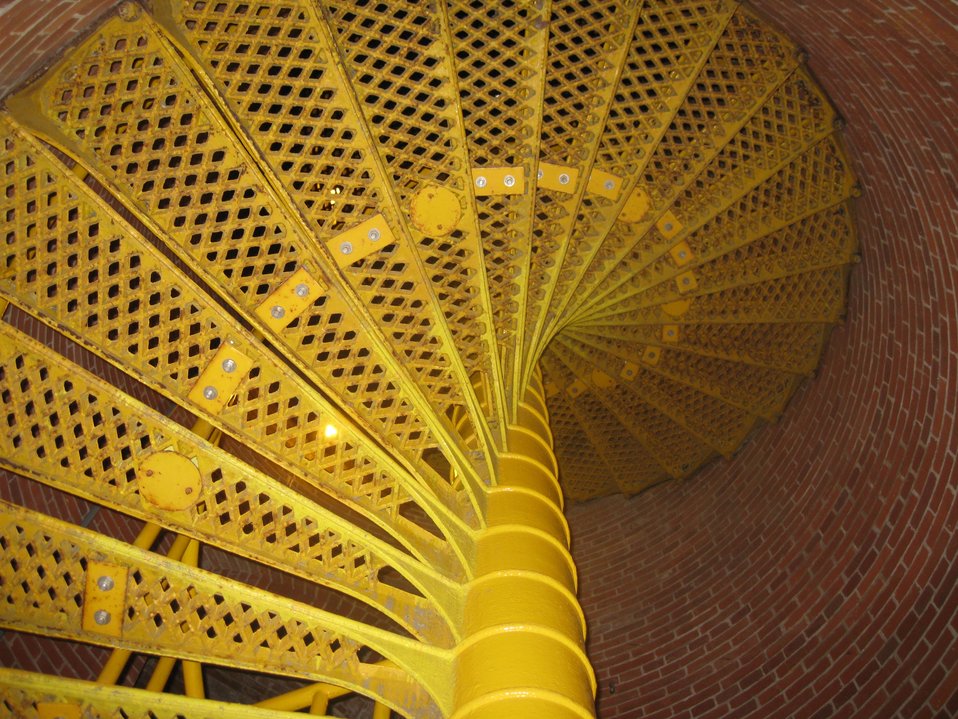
The spiral staircase going to the top of Barnegat Lighthouse.